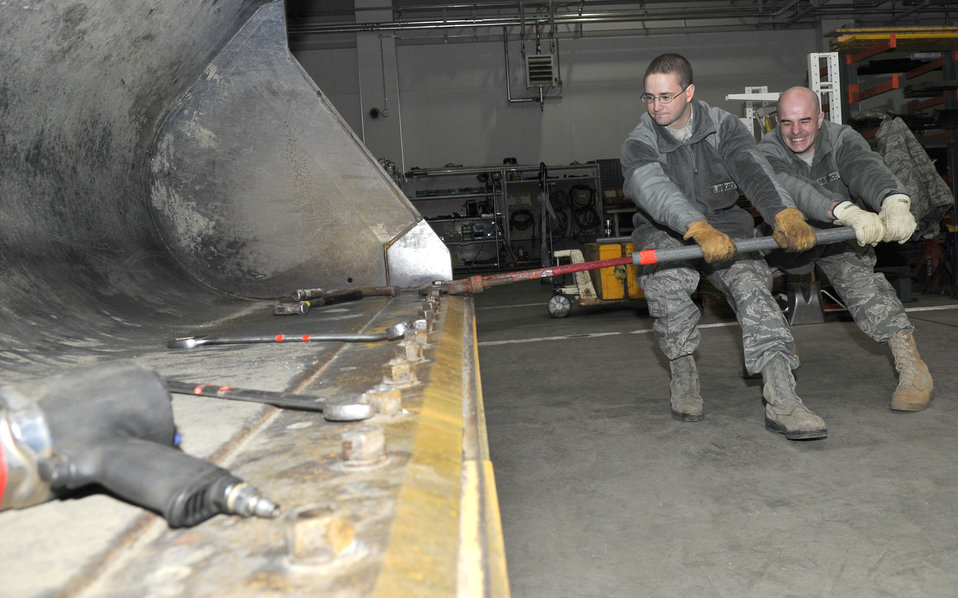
CE Clears the Way

(From left) Airman 1st Class Steven Leary and Tech. Sgt. Christopher Messmer strain on a cheater bar slid over a pipe wrench to loosen rusted bolts on a front-end loader's bucket Dec. 16, 2010, at Misawa Air Base, Japan. The front-end loader is equipped with sacrificial skid plates on the bucket, which take the abuse of grinding on the ground instead of the more expensive bucket. Airman Leary and Sergeant Messmer are 35th Civil Engineer Squadron pavements and equipment construction technicians